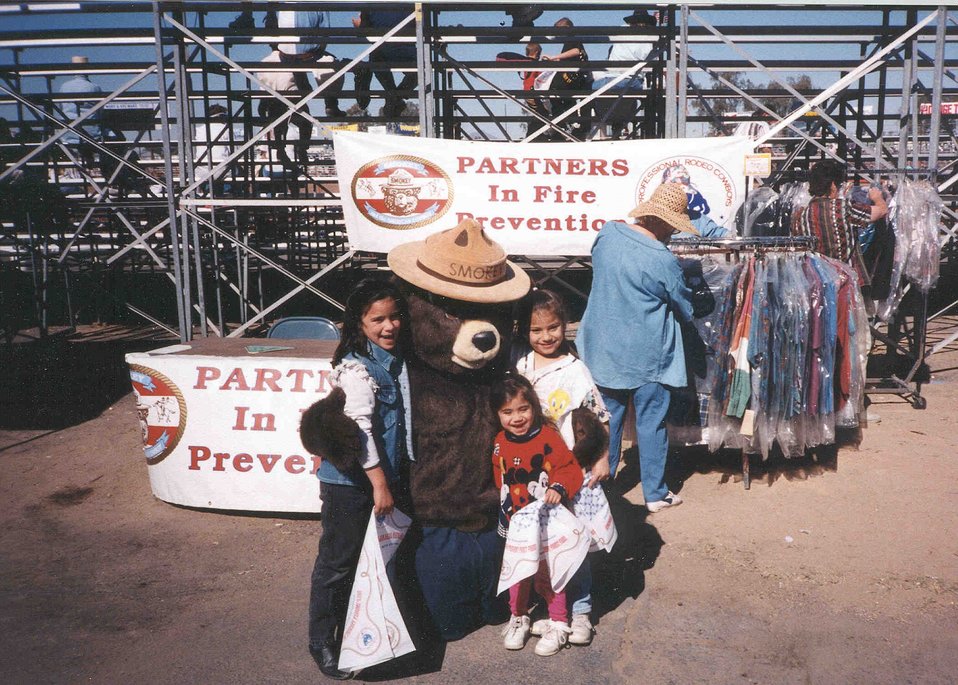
Smokey Bear with children at the rodeo